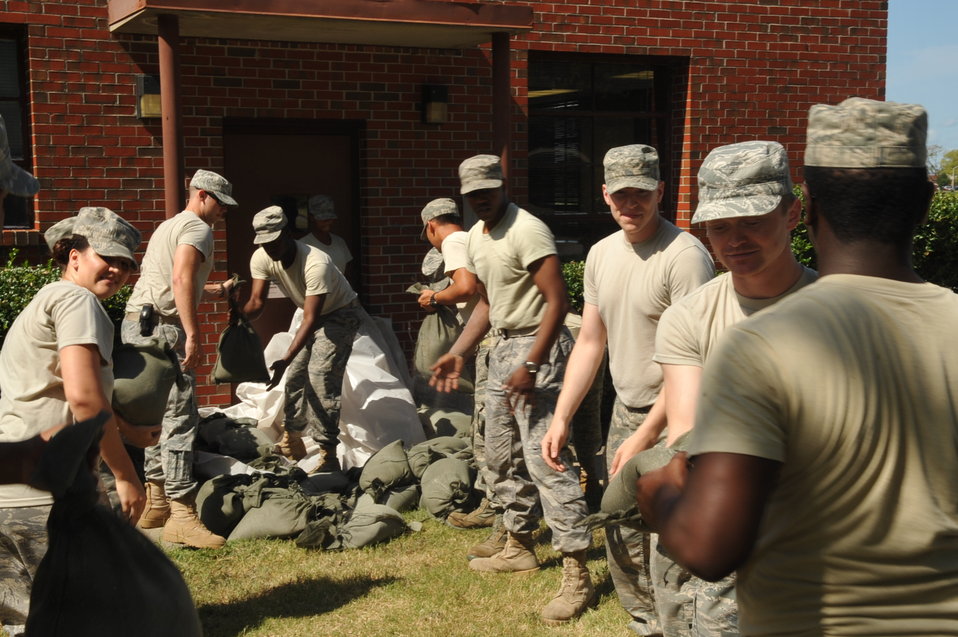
Preparing for the storm

Airmen from the 633rd Communications Squadron sandbag the doorways at the base telephone office Aug. 25, 2011, in an effort to prevent flooding at Langley Air Force Base, Va. The base is preparing for Hurricane Irene, which is expected to make landfall in the area early Sunday morning.